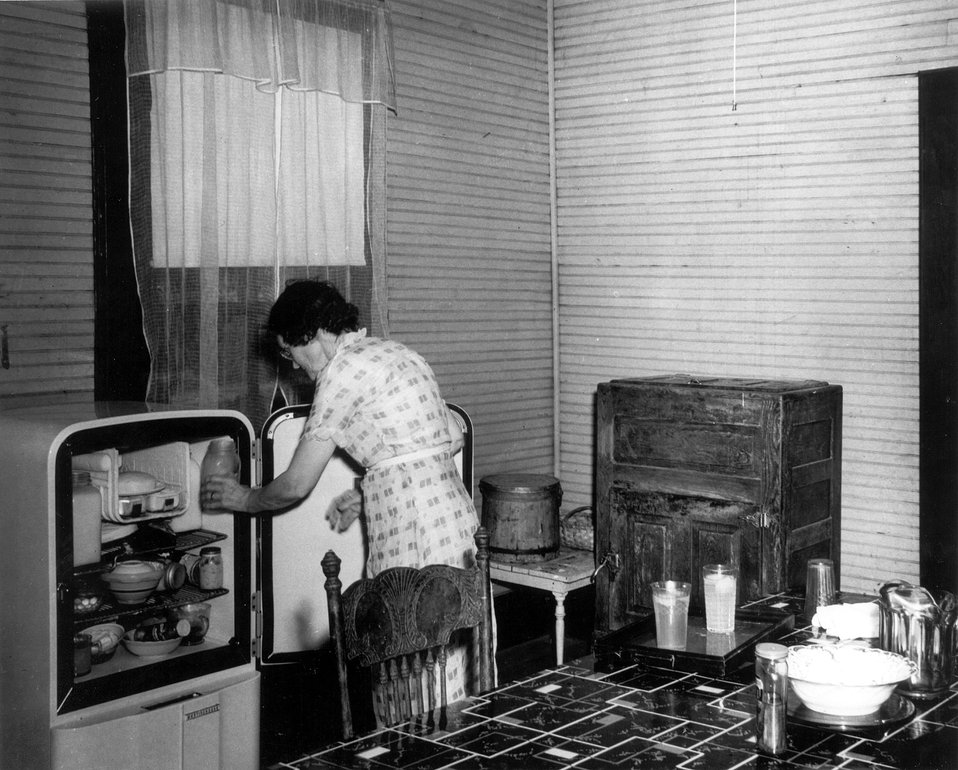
A kitchen in Putnam County, GA. that has just received electricity shows the contrast of the old and the new.